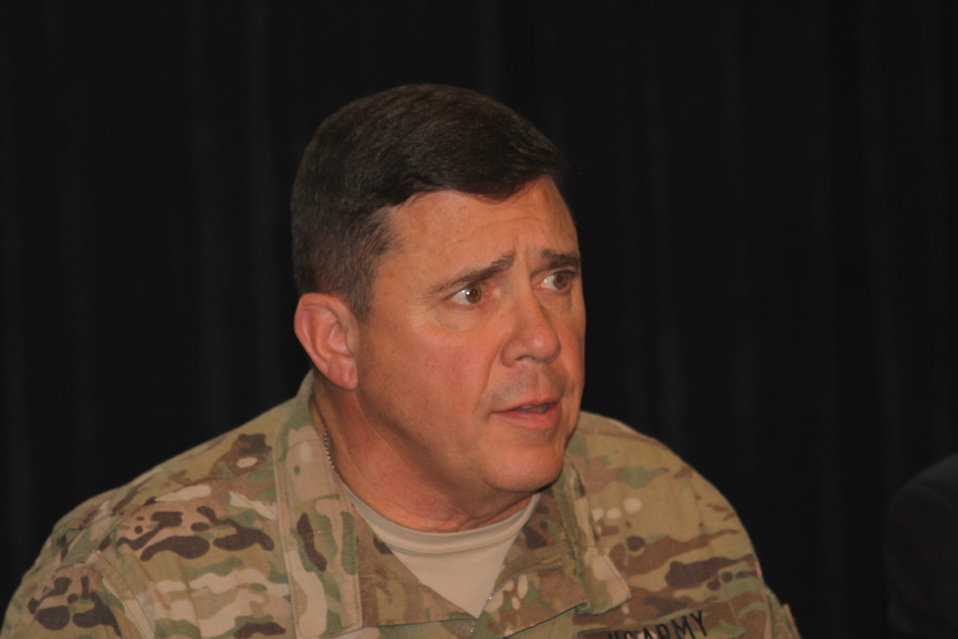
MG McHale